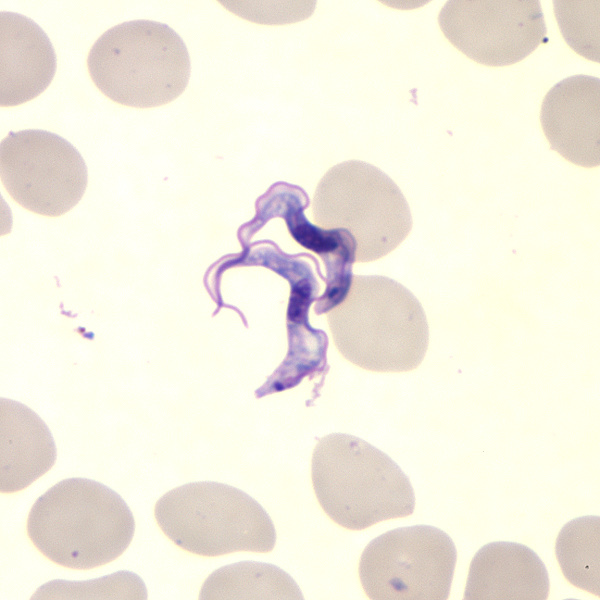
This Giemsa-stained light photomicrograph revealed the presence of two Trypanosoma brucei parasites, which were found in a blood smear.